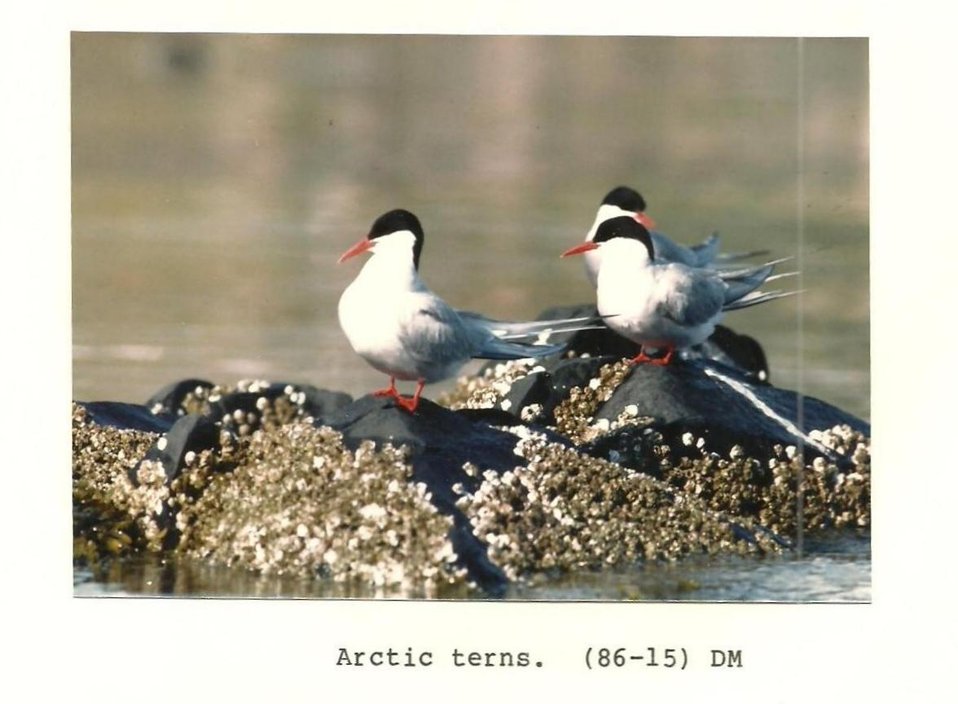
(1986) Arctic Terns

Credit: USFWS

Source and Contact: Kodiak National Wildlife Refuge